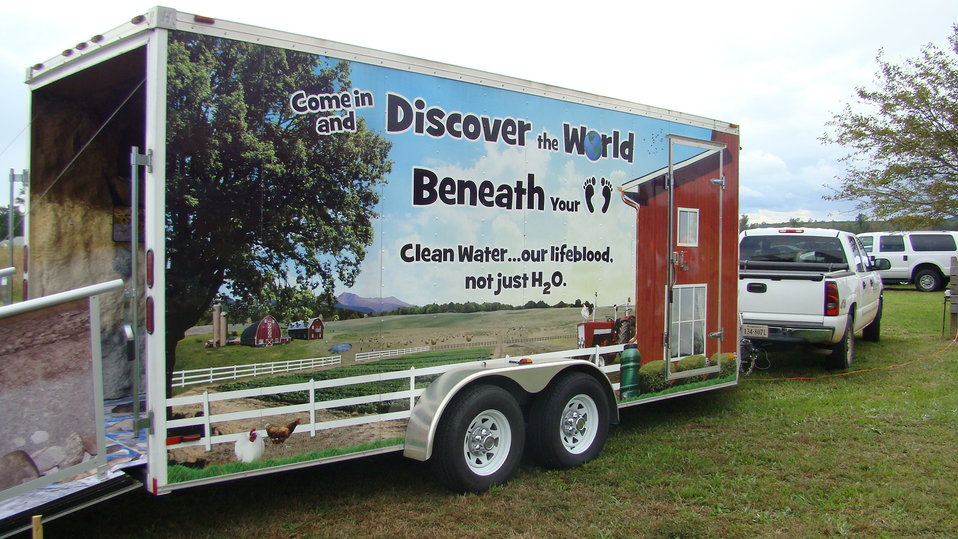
Rappahannock River Valley NWR 15th Anniversary

USDA Soil and Water Conservation District underground immersion experience exhibit.